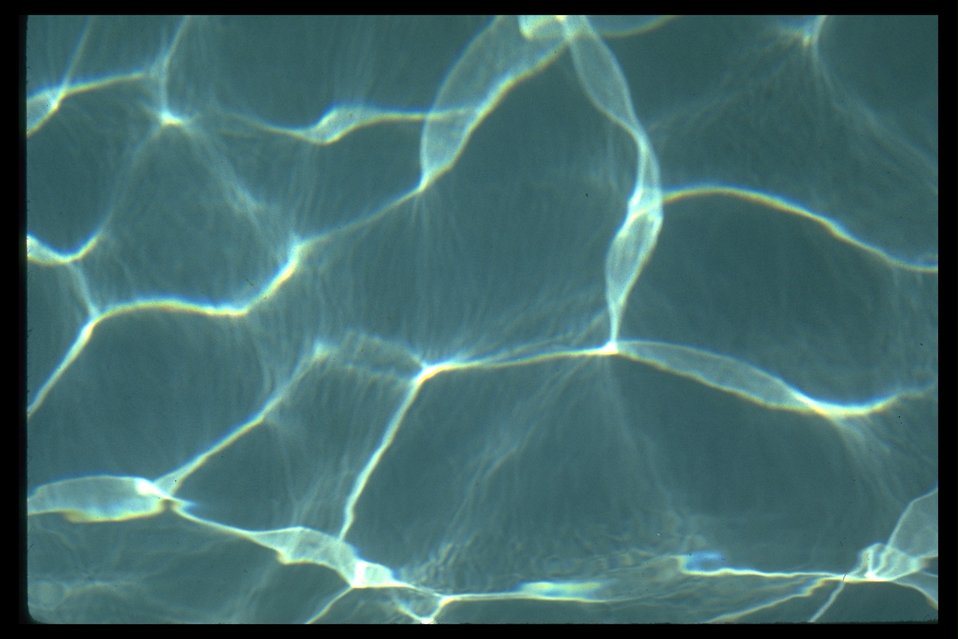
Water reflection pattern.